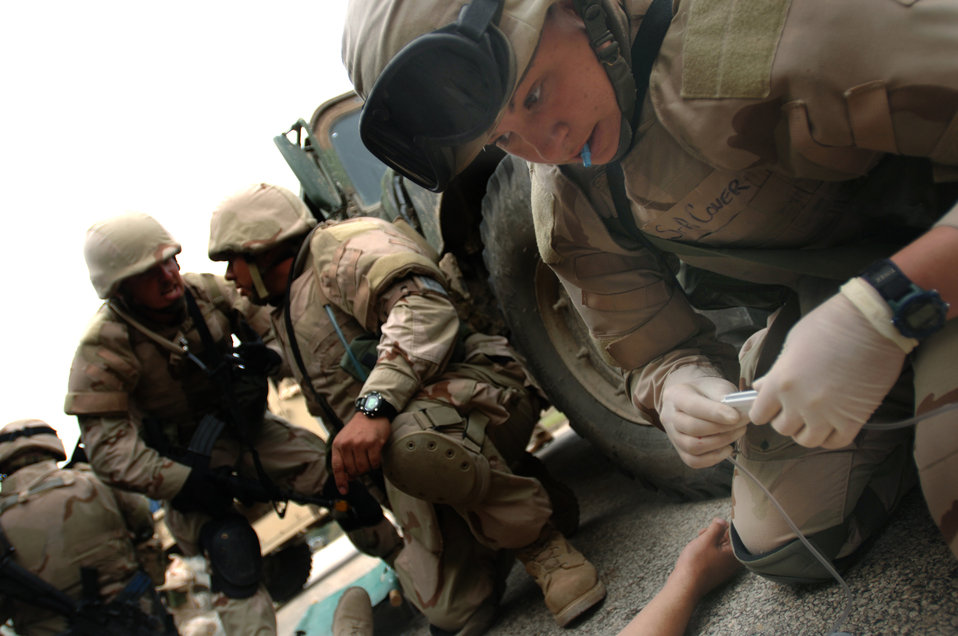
Convoy tactics

Senior Airman Rachel Cover prepares to insert an IV into a simulated convoy casualty during the Basic Combat Convoy Training course at Camp Bullis, Texas, on Monday, April 3, 2006. The course is designed to keep Airmen battlefield focused and well-trained for convoy operations.